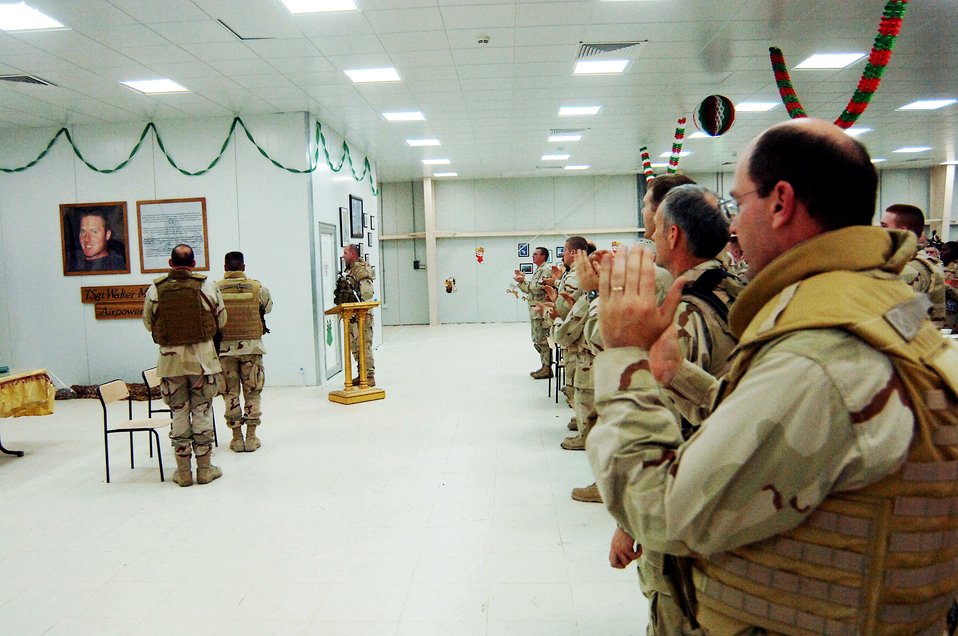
Air Force dining facility in Baghdad honors hero

Members of the 447th Air Expeditionary Group at Sather Air Base in Baghdad applaud during a ceremony Dec. 25 marking the opening of the Tech. Sgt. Walter M. Moss Airpower dining facility. Sergeant Moss, an explosive ordnance disposal team leader, was deployed to Sather Air Base when he was killed in action in March.